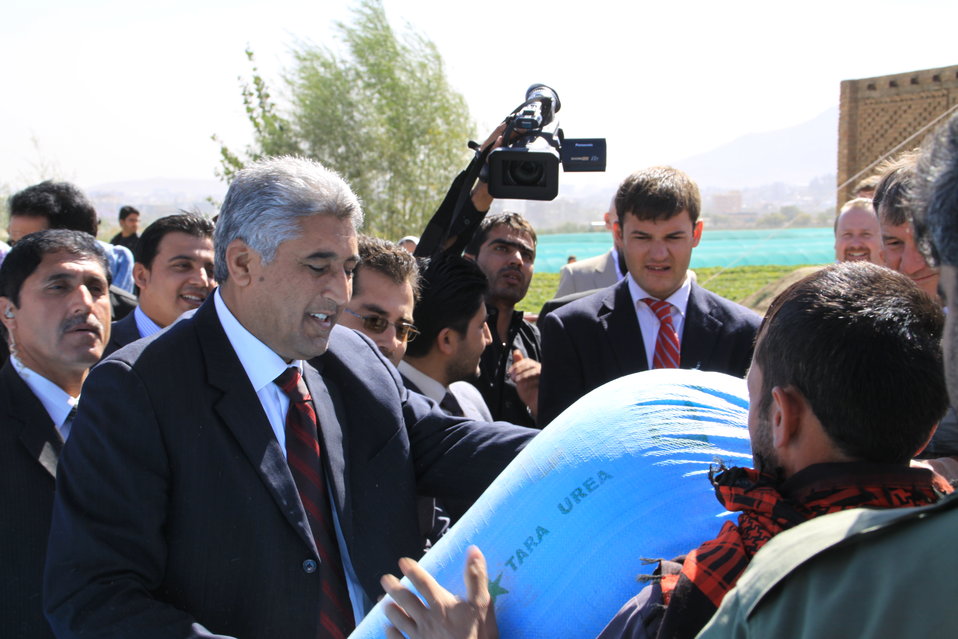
AVIPA Plus Wheat Seed Distribution 101005

US Ambassador Karl Eikenberry and USAID Acting Mission Director Kevin Brownawell joined the Minister of Agriculture, Irrigation and Livestock, H.E. Minister Mohammed Rahimi in signing a Memorandum of Understanding and distributing vouchers to area farmers for wheat and fertilizer.

US Ambassador Karl Eikenberry and USAID Acting Mission Director Kevin Brownawell joined the Minister of Agriculture, Irrigation and Livestock, H.E. Minister Mohammed Rahimi in signing a Memorandum of Understanding and distributing vouchers to area farmers for wheat and fertilizer.

US Ambassador Karl Eikenberry and USAID Acting Mission Director Kevin Brownawell joined the Minister of Agriculture, Irrigation and Livestock, H.E. Minister Mohammed Rahimi in signing a Memorandum of Understanding and distributing vouchers to area farmers for wheat and fertilizer.